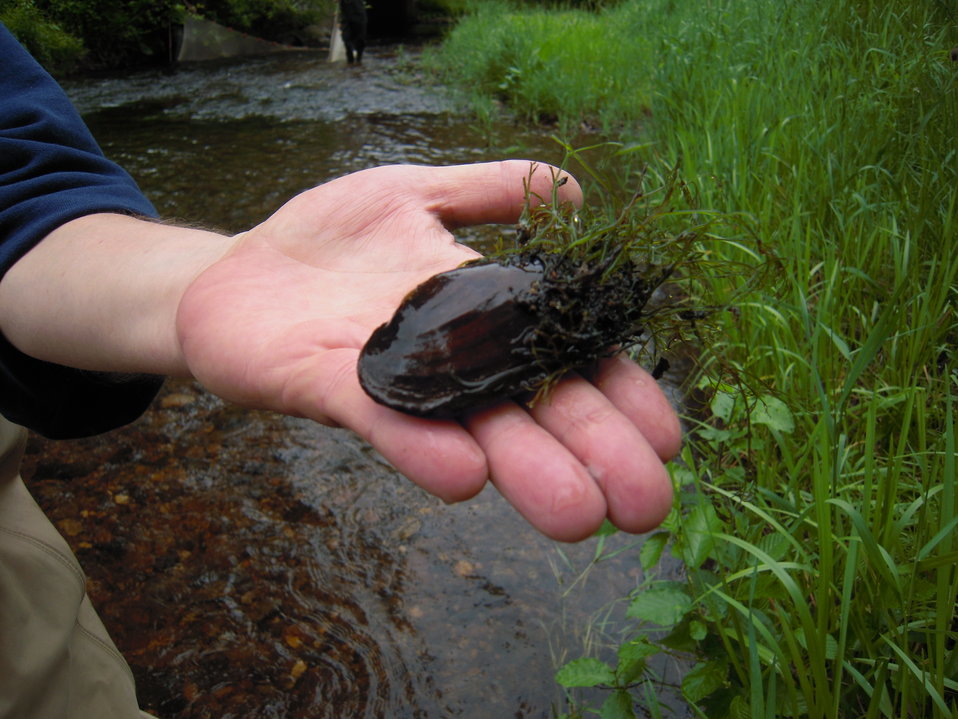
Fresh water mussel